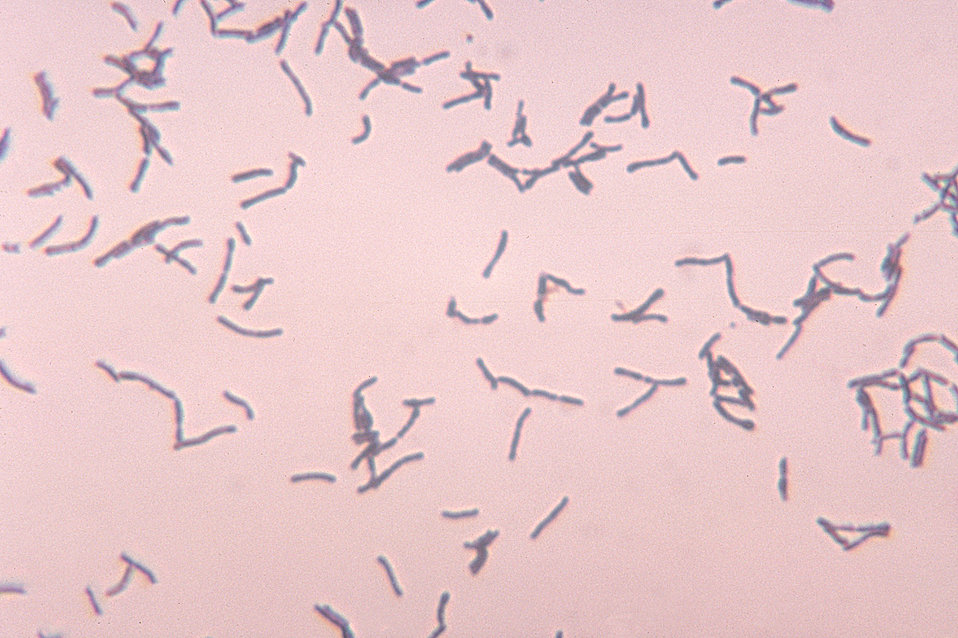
This micrograph depicts the gram-positive bacterium Bifidobacterium eriksonii grown in thioglycollate medium at 48 hours.